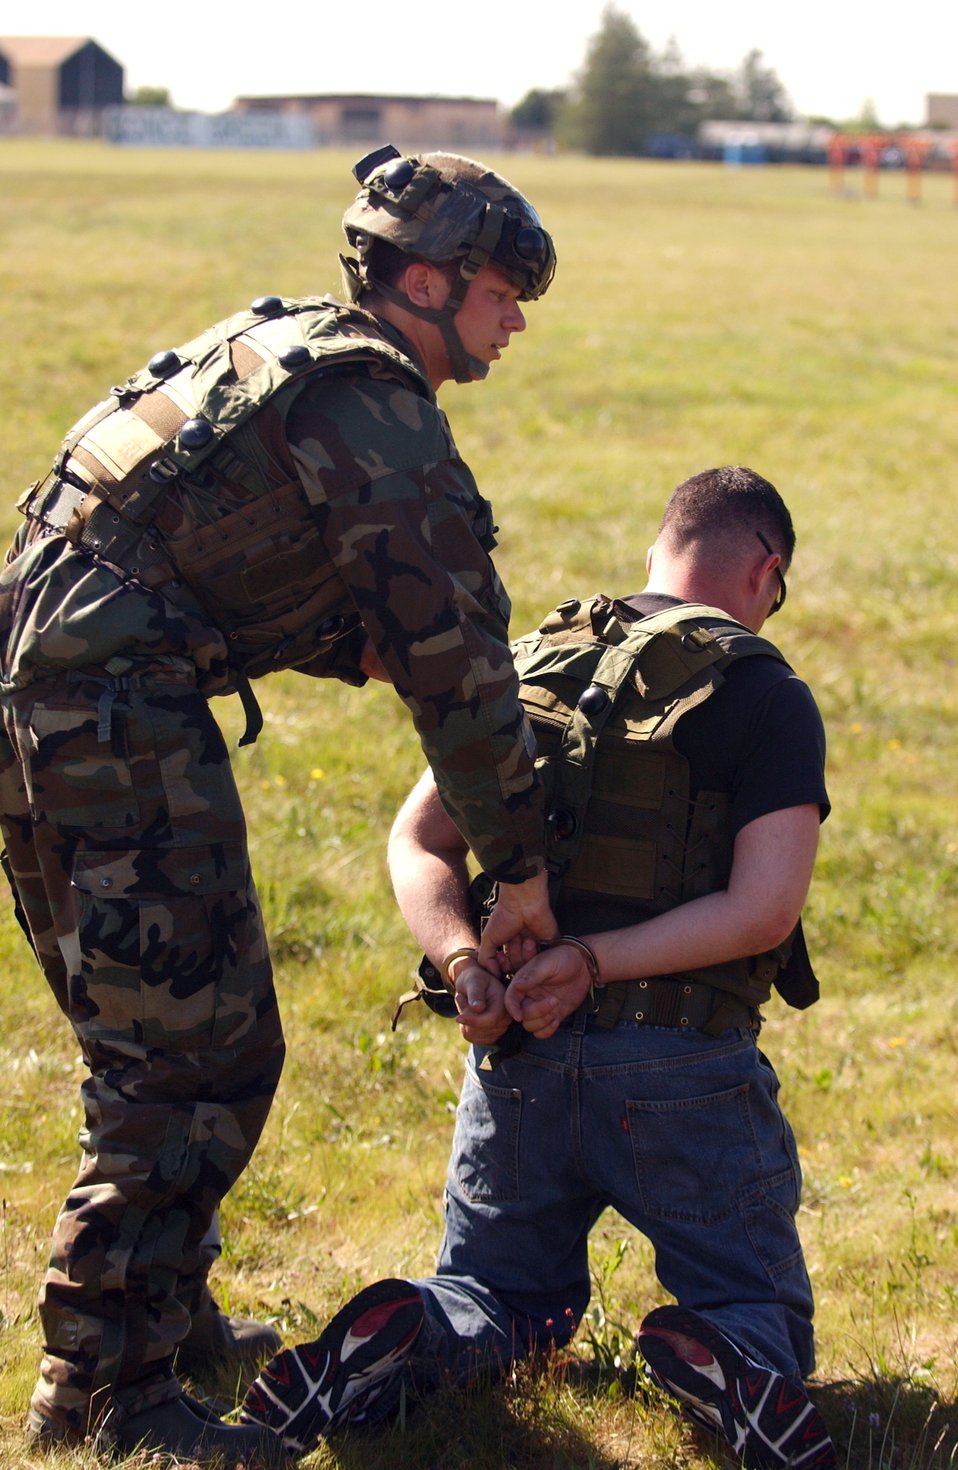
Airmen defend base during exercise

Airman 1st Class Adam Mitchell apprehends an